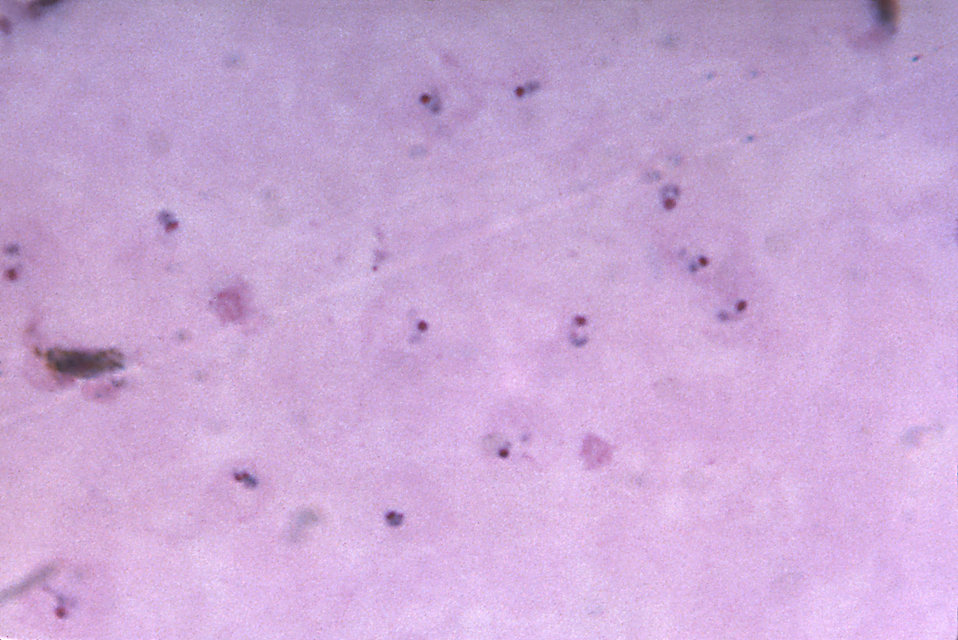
This thick film micrograph shows a number of P. vivax complete and incomplete ring stage trophozoites, Magnified 1125x.